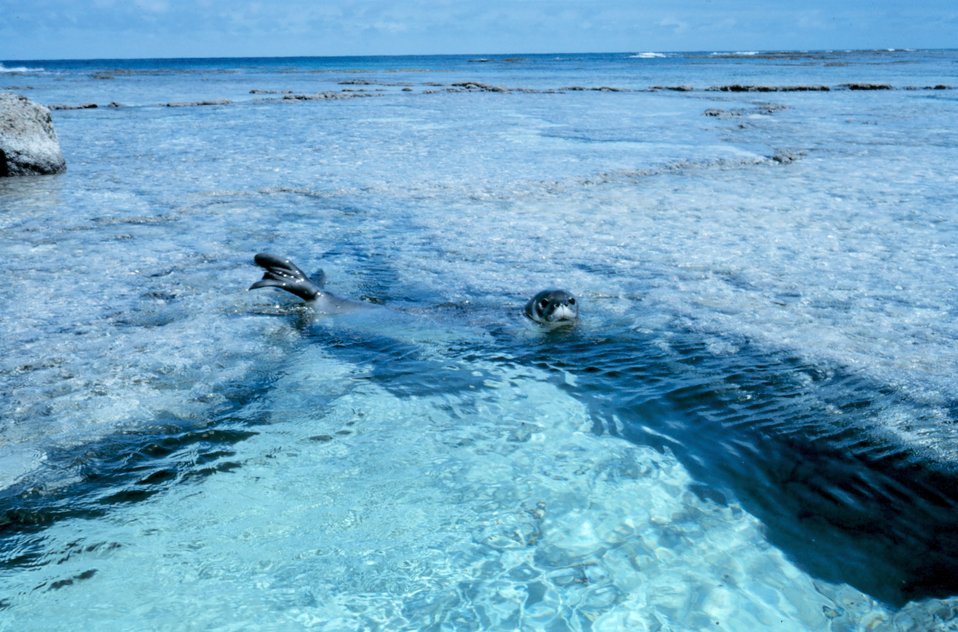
Hawaiian monk seal - Monachus schauinslandi.